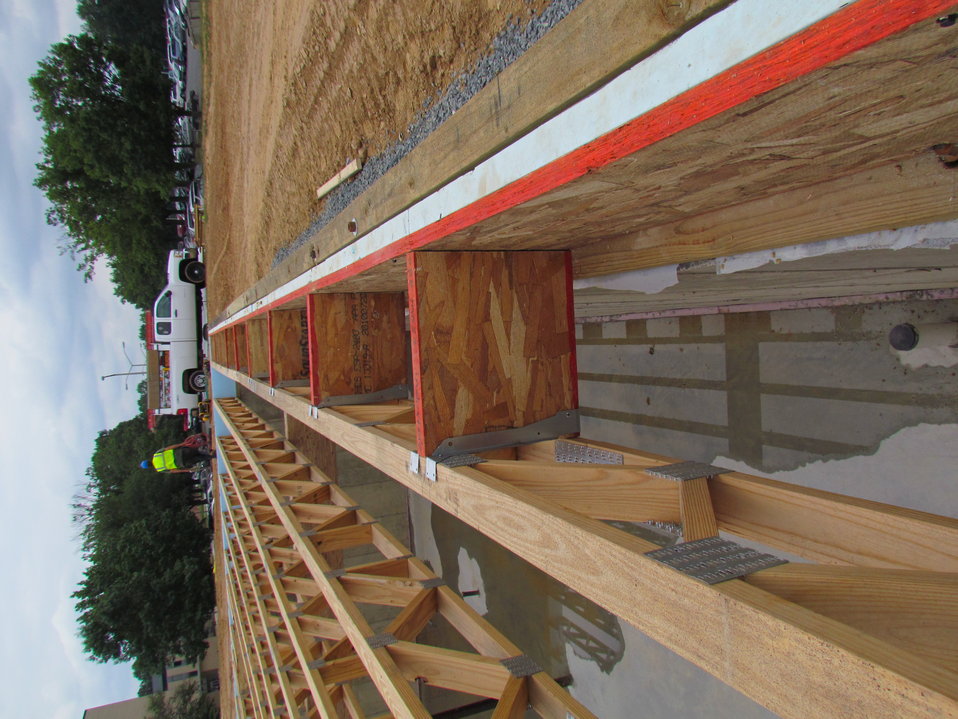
Net-Zero Energy Residential Test Facility - Picture showing blocking installed between web floor joist and outer wall. Pictures also shows thermal insulation (blue) to prevent unwanted heat flow.